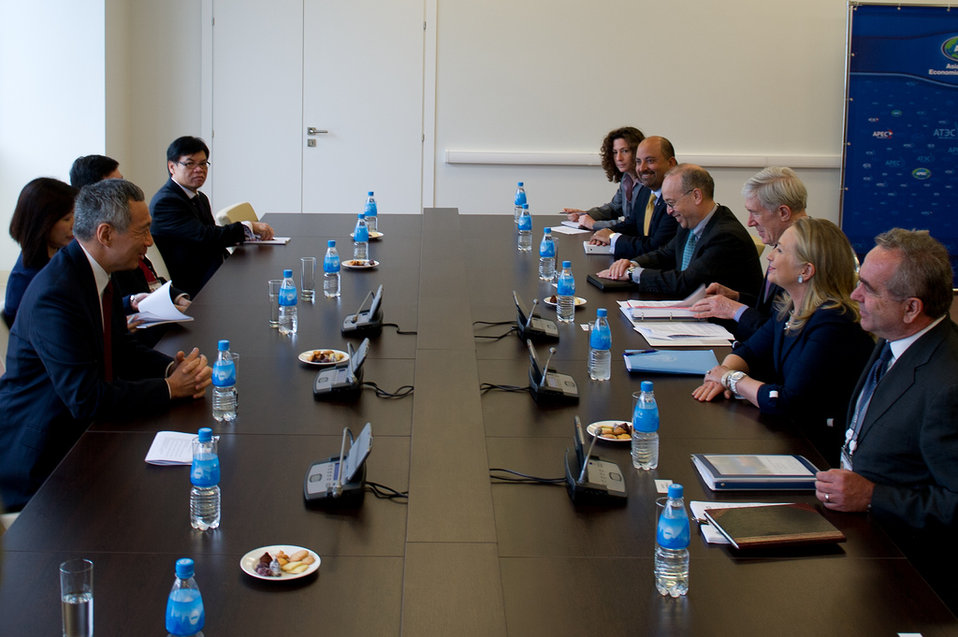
Secretary Clinton Meets With Singaporean Prime Minister Lee Hsien Loong

U.S. Secretary of State Hillary Rodham Clinton meets with Singaporean Prime Minister Lee Hsien Loong during the Asia-Pacific Economic Cooperation Leaders' Week in Vladivostok, Russia, September 8, 2012.